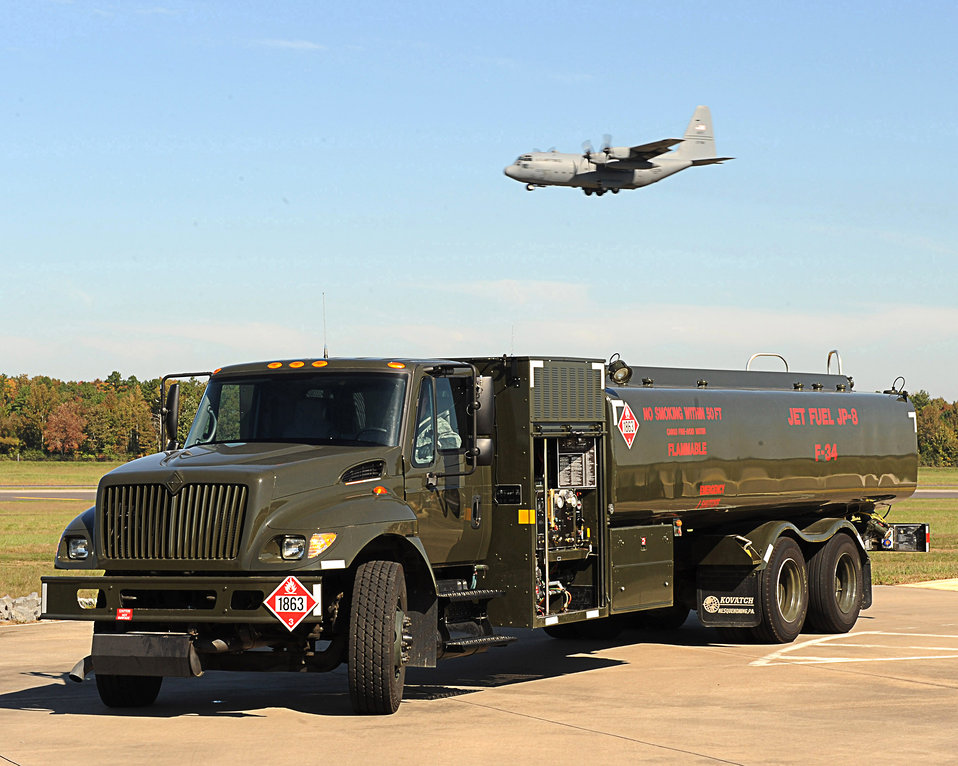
Senior Airman William Ellzey drives an R-11 refueling truck with 6,000 gallons of jet fuel to service the C-130 Hercule fleet Oct. 21, 2009, at Little Rock Air Force Base, Ark. Airman Ellzey is a 19th Logistics Readiness Squadron fuel distribution operator.